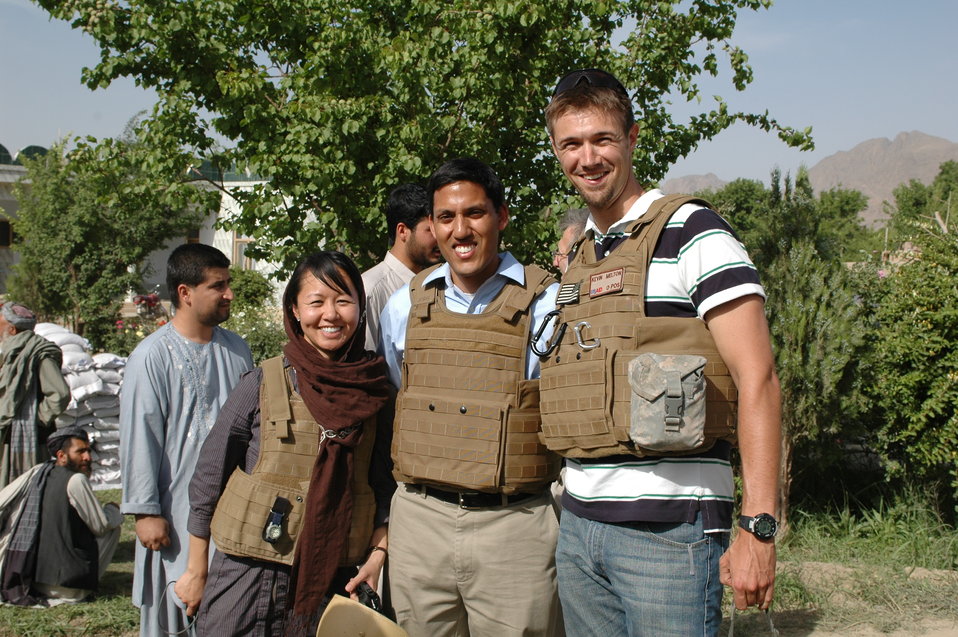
Dr Shah Visits Argandab April 10, 2010